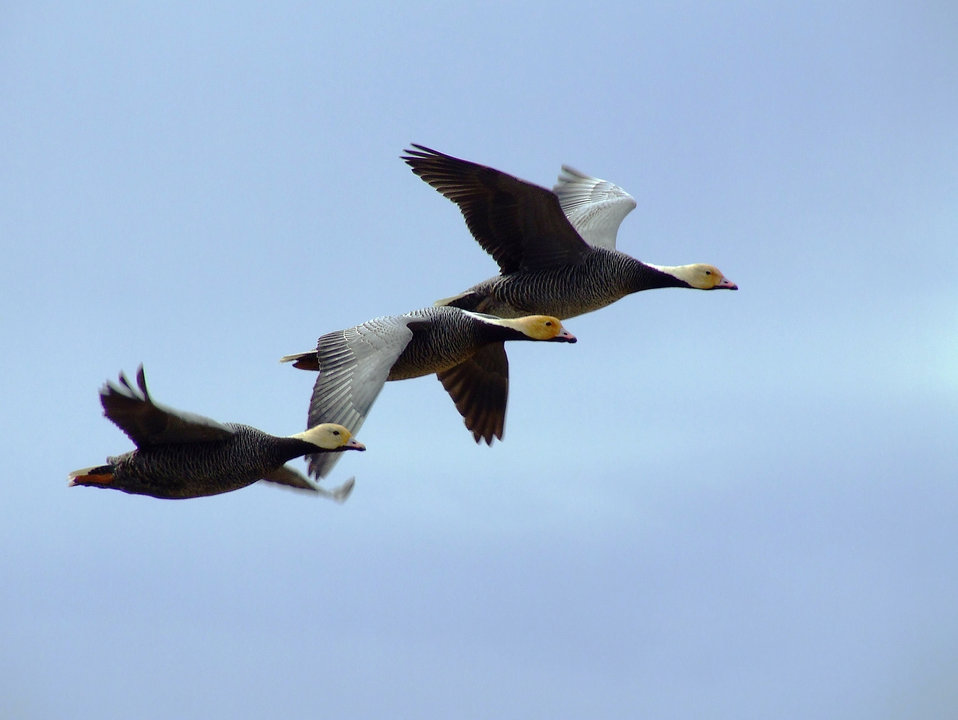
Emperor goose fly-by

Yukon Delta National Wildlife Refuge/ USFWS